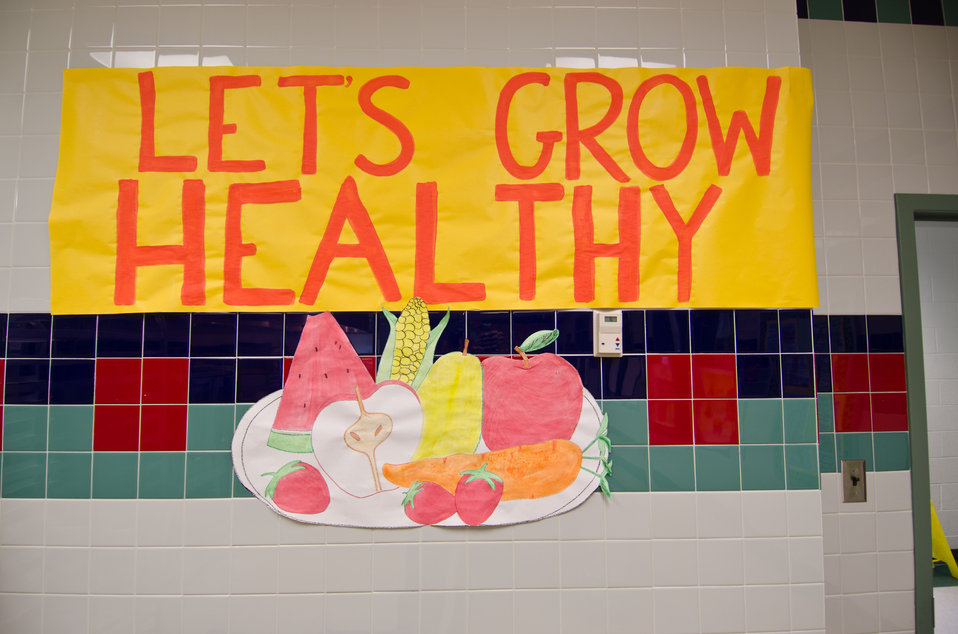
'Let's Grow Healthy' banner displayed at the beginning of the food service line at Nottingham Elementary School in Arlington, VA, on Wednesday, October 12, 2011.